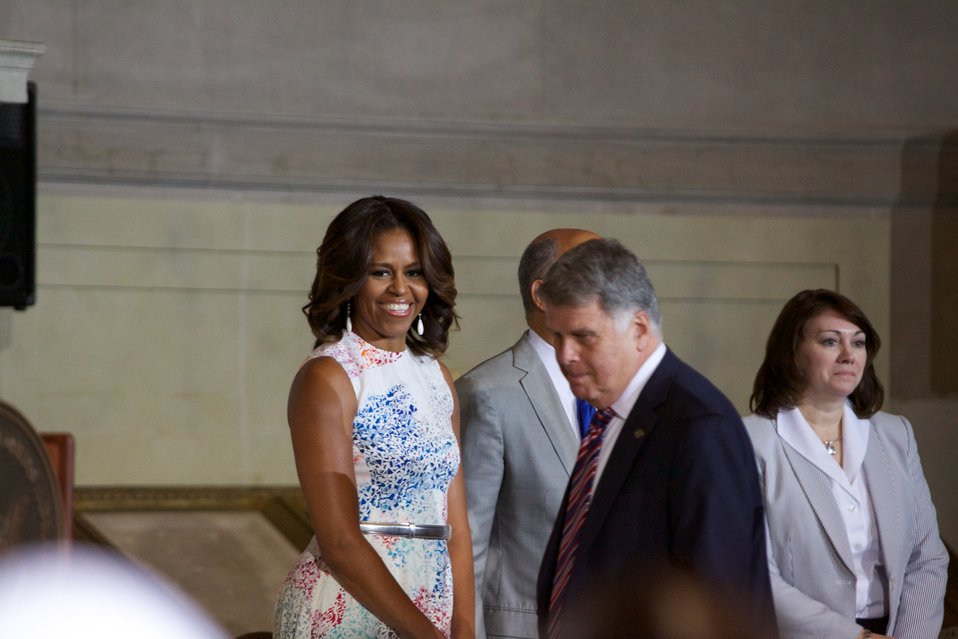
Naturalization Ceremony with Michelle Obama